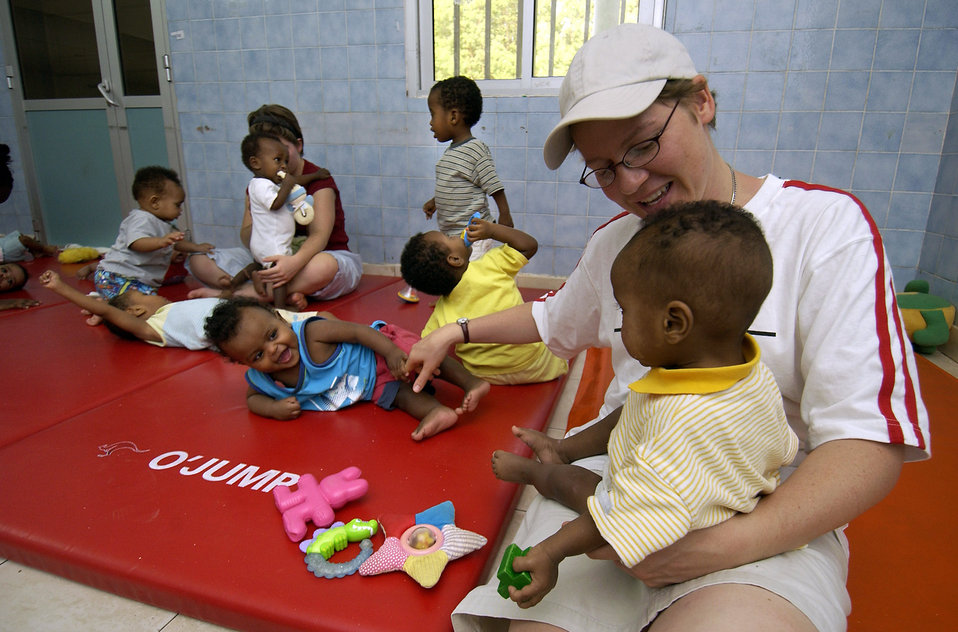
Helping Hand

AFRICA -- Staff Sgt. Kate Robinson spends time with a young boy after feeding him dinner. She is one of many U.S. servicemembers who volunteer to help feed, change, bathe and clothe the infants twice a day. She is assigned to the 4th Combat Camera Squadron at March Air Reserve Base, Calif.